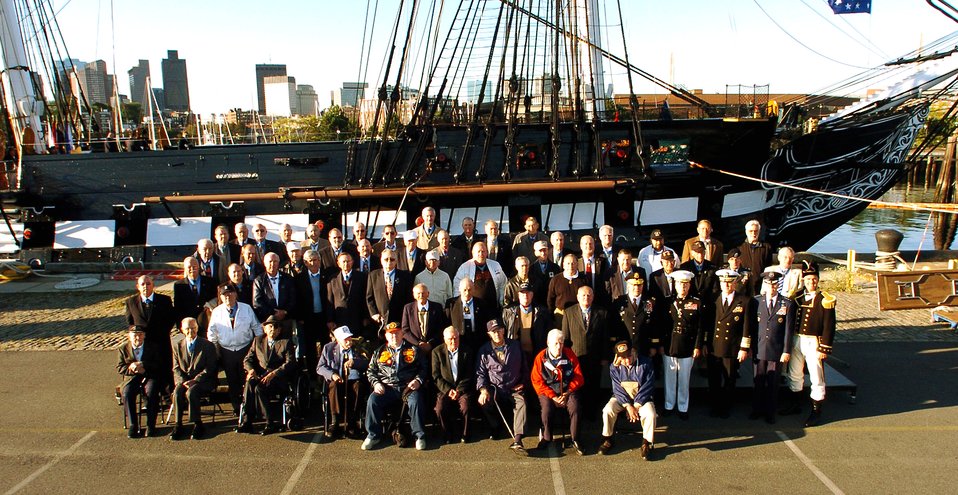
'Old Ironsides' USS Constitution host Medal of Honor recepients

More than 70 Medal of Honor recipients gather in Charlestown, Mass., for a group photo in front of the USS Constitution, the world's oldest commissioned warship afloat. They were there for a turnaround cruise and Medal of Honor flag presentation Sept. 30 in Boston Harbor. The Medal of Honor is the country's highest military honor, awarded for acts of valor above and beyond the call of duty.